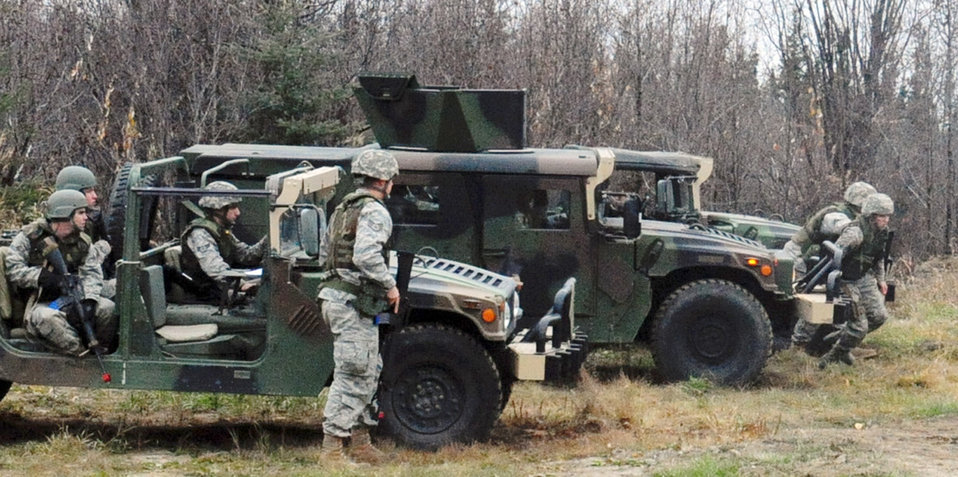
Combat skills training

Airmen rush to